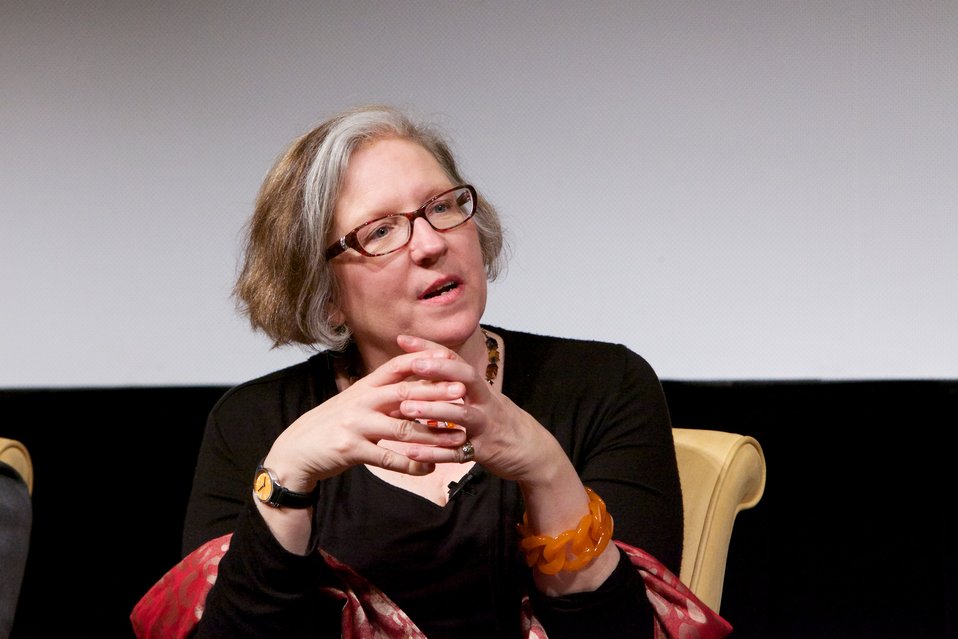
Jazz Diplomacy: Sending America's Music to the World